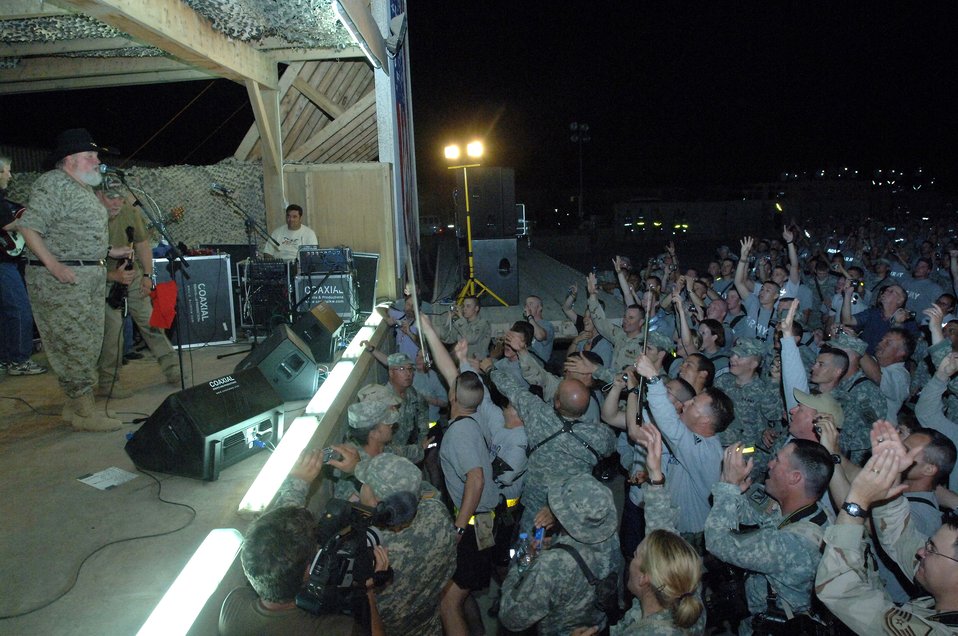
Charlie Daniels entertains the troops

The Charlie Daniels Band plays for military members of Ali Base, Iraq, on Saturday, April 15, 2006, as part of Stars for Stripes, a nonprofit organization which works with Armed Forces Entertainment and U.S. Army Europe Morale, Welfare and Recreation to bring celebrity entertainment to remote sites. The Charlie Daniels Band has been entertaining U.S. military troops around the world for more than 35 years.